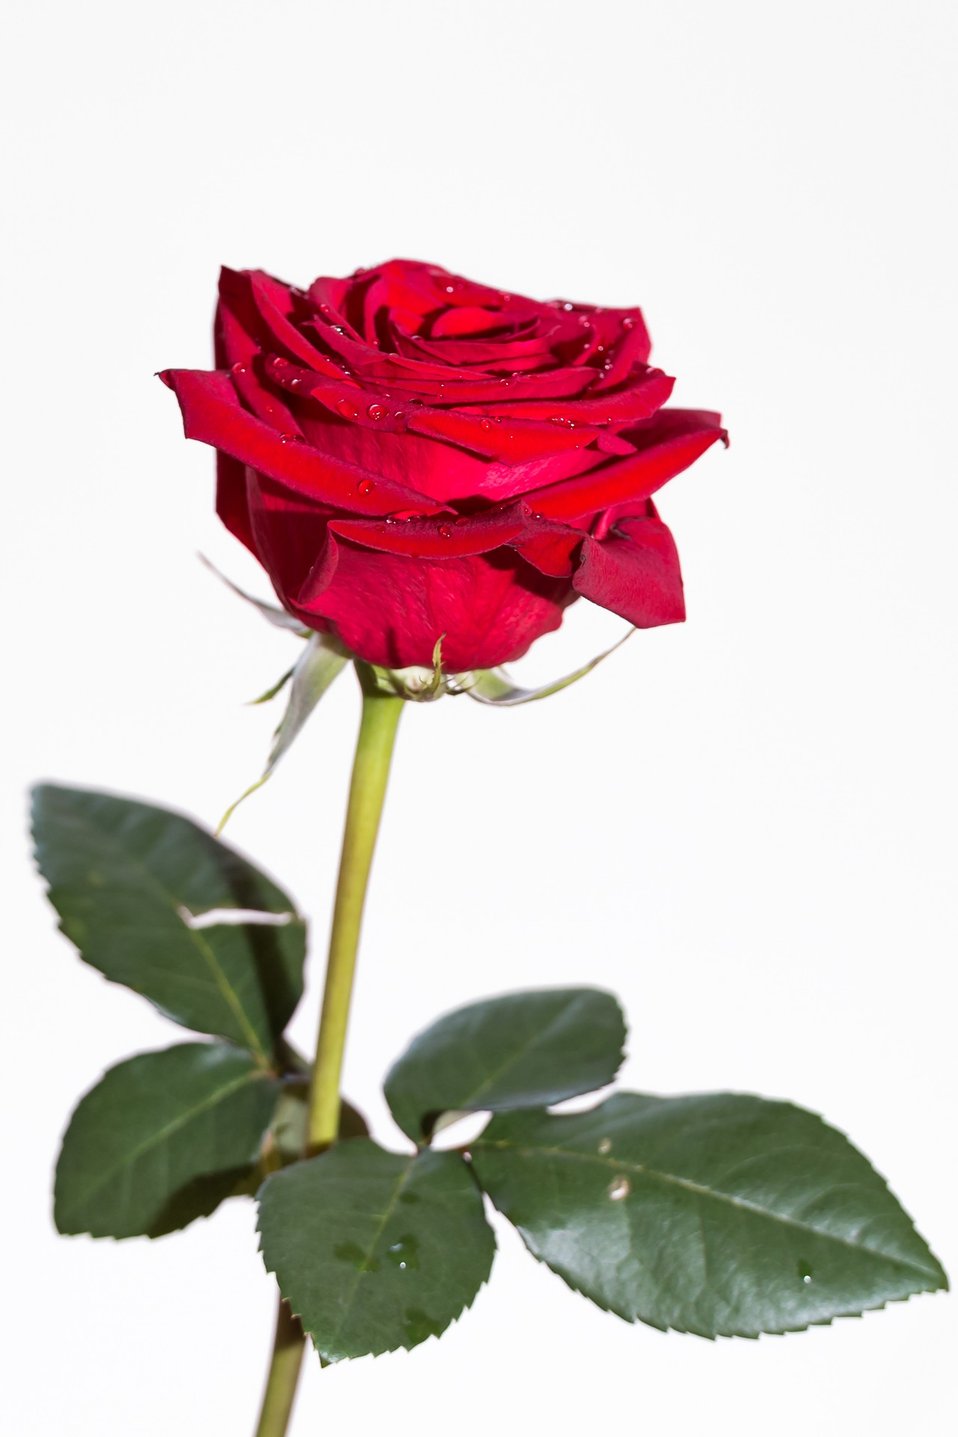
Red rose on white background.